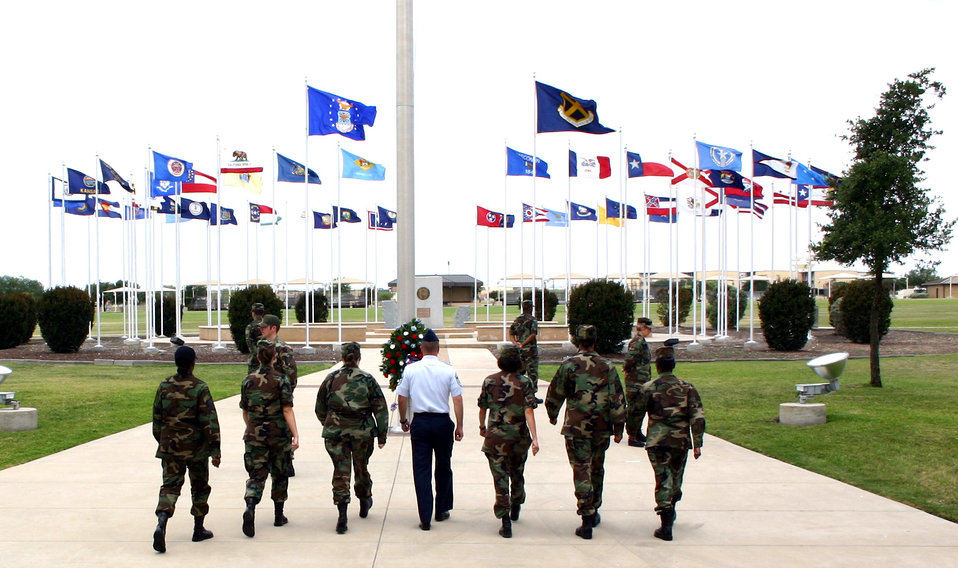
Silent vigil

Airmen march forward to relieve others standing in a silent vigil at Lackland Air Force Base, Texas, on Friday, May 26, 2006. The vigil, part of the base's Memorial Day observances, honored the contributions of servicemembers who are, or were, missing in action or prisoners of war. Each shift stood vigil for 10 minutes during the eight-and-a-half-hour observance.